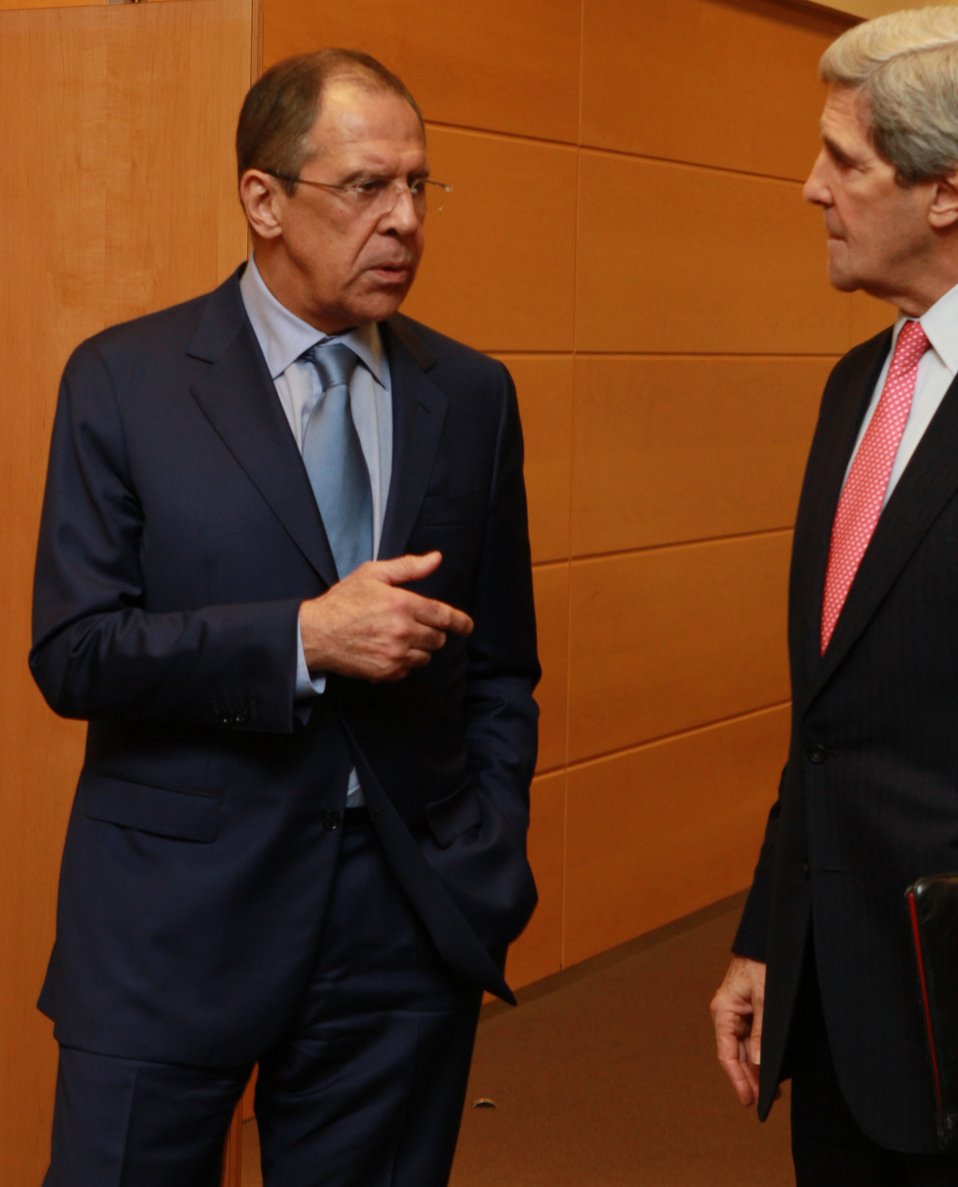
Secretary Kerry and Russian Foreign Minister Lavrov After Their Bilateral Meeting

U.S. Secretary of State John Kerry meets with Russian Foreign Minister Lavrov at the NATO Foreign Ministerial in Brussels, Belgium, on April 23, 2013.